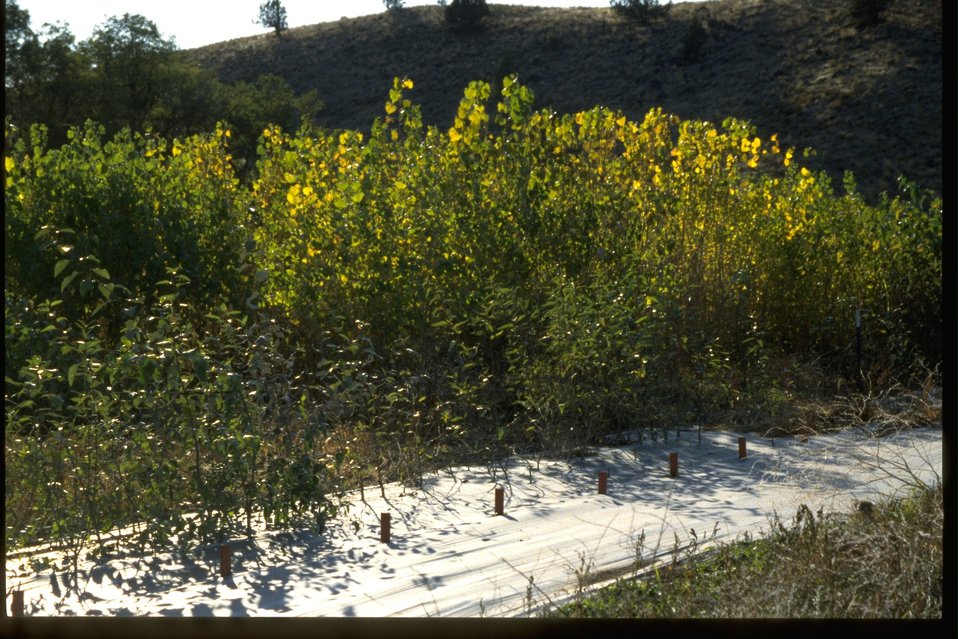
Cottonwood plantation near Clarno Road. Ground cloth under trees.